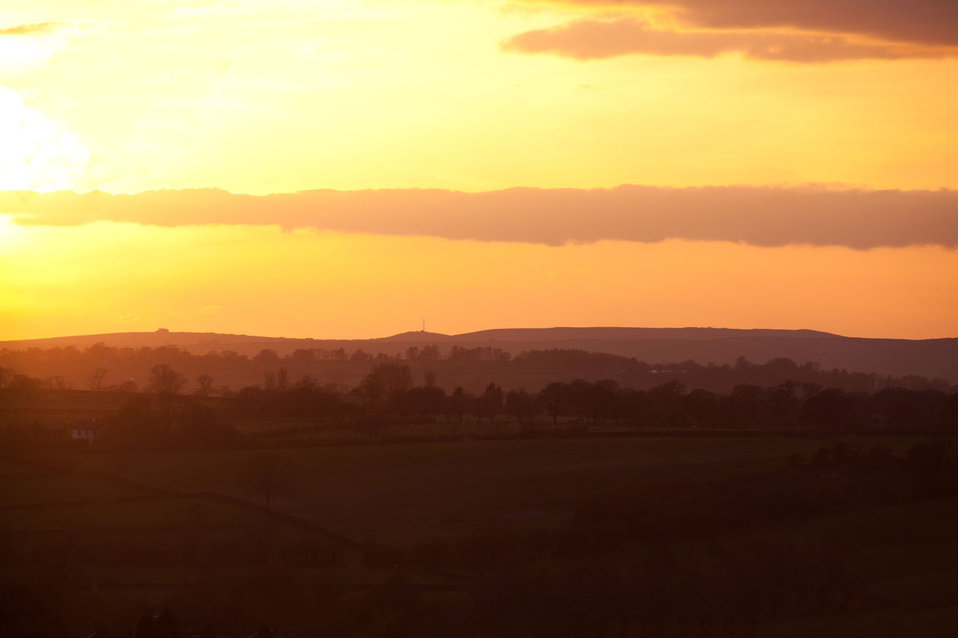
English sunset

Sunset in yorkshire - north england.